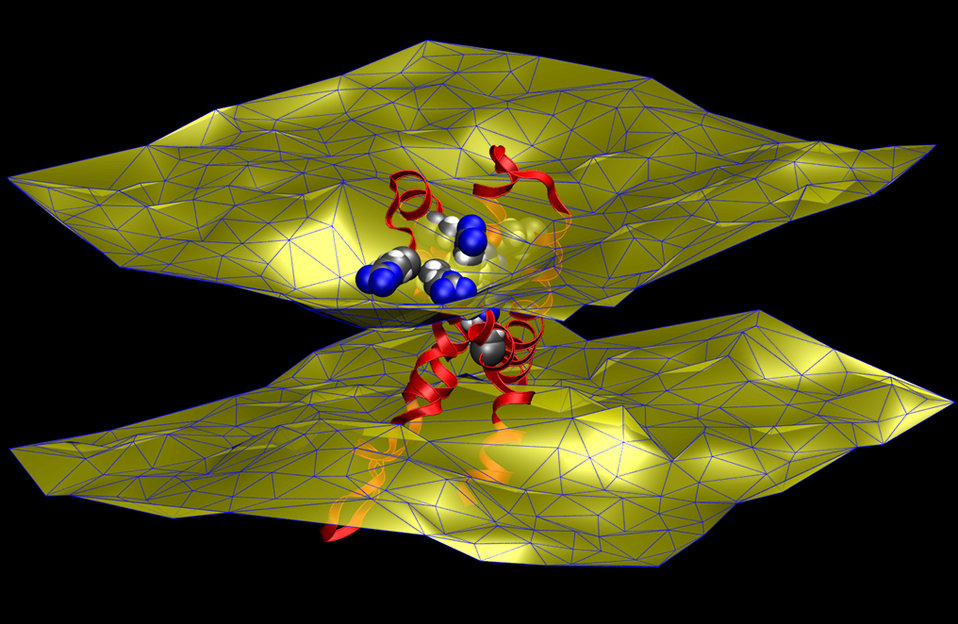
Neutron diffraction; Ion channels

An imaging technique known as neutron diffraction, used along with molecular simulations, revealed that an ion channels voltage sensing domain (red, yellow and blue molecule at center) perturbs the two-layered cell membrane that surrounds it (yellow surfaces), causing the membrane to thin slightly.